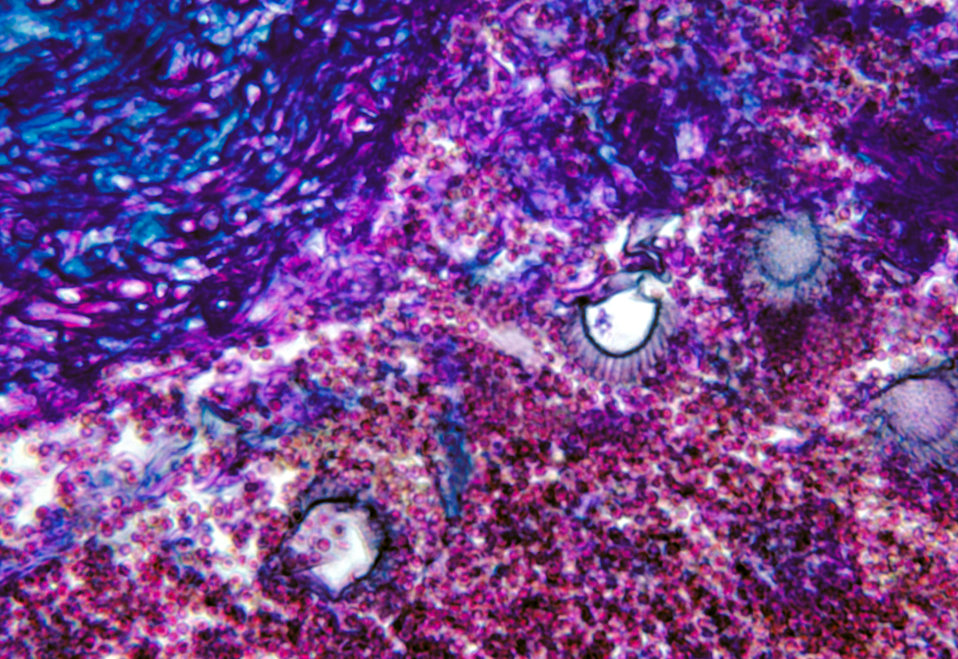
Histopathology of aspergillosis of the lung of a caged sulfur-crested cockatoo caused by Aspergillus fumigatus.